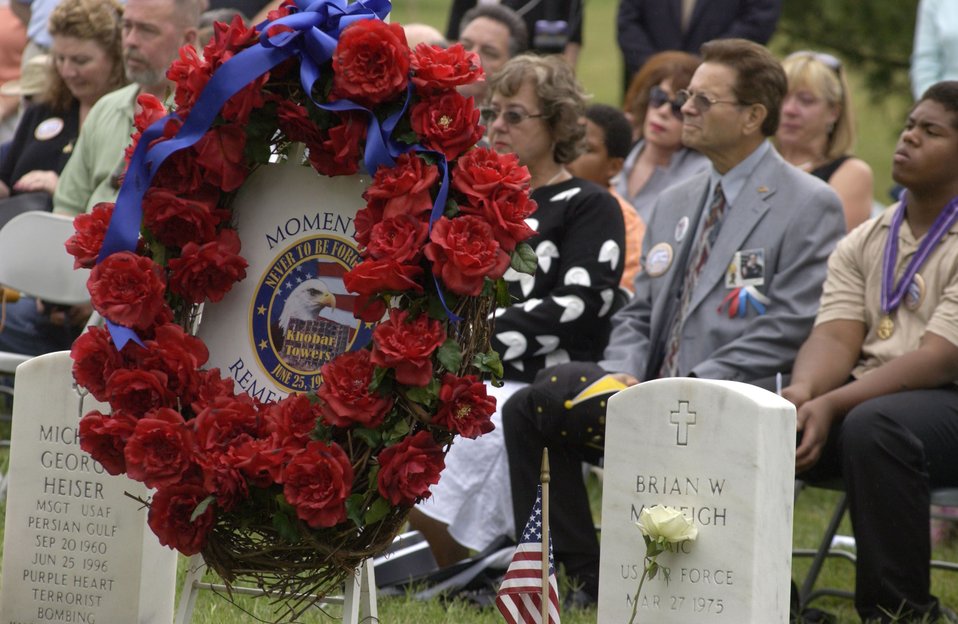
Khobar Towers 10th Anniversary

A wreath stands between the headstones of Master Sgt. Michael George Heiser and Airman 1st Class Brian W. McVeigh during the remembrance ceremony for the Khobar Towers bombing on Sunday, June 25, at Arlington National Cemetery, Va. The two were among 19 Airmen killed on June 25, 1996, in the terrorist bombing at Dhahran Air Base, Saudi Arabia. Family members and friends of the Airmen killed in the terrorist bombing gathered for the ceremony.